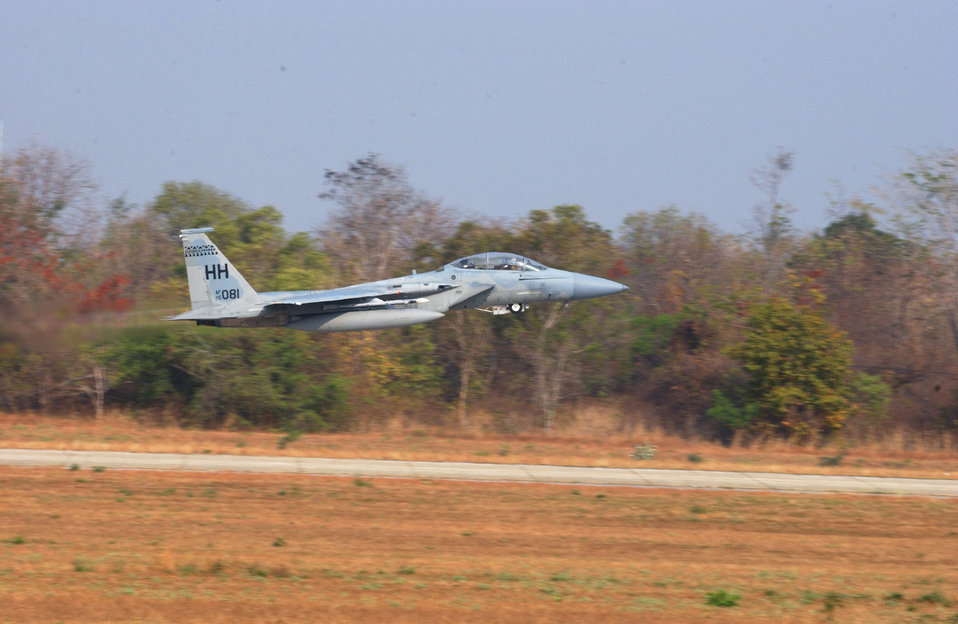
Hawaiian Eagle

KORAT AIR FORCE BASE, Thailand -- An F-15 Eagle from the Hawaii Air National Guard's 199th Fighter Squadron takes off for a joint-exercise sortie during Cope Tiger 2005 on Jan. 21.